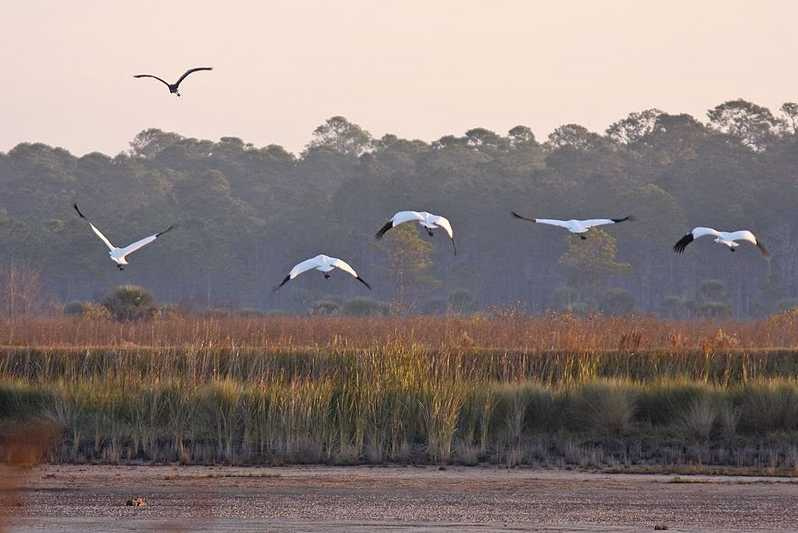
whooping cranes and marsh

St. Marks National Wildlife Refuge, FL